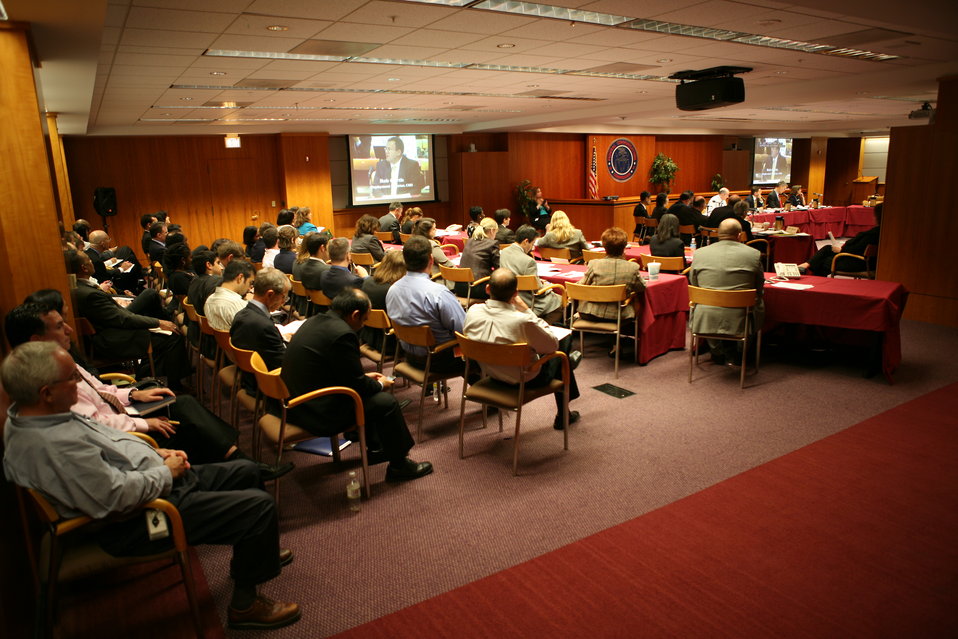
Broadband Midterm Review 9-29-09